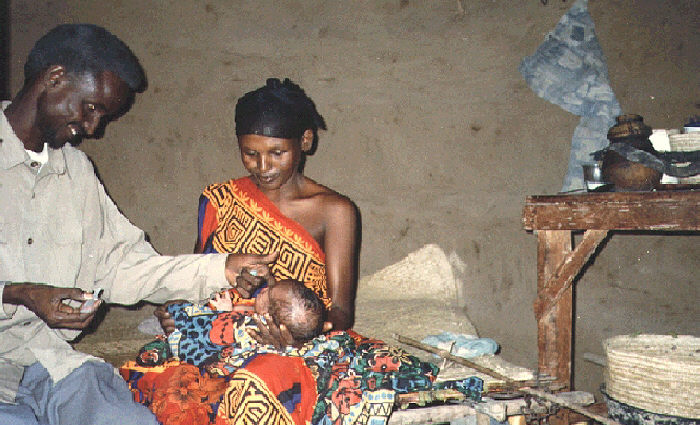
Child receiving oral polio vaccine, Somalia, 1998.